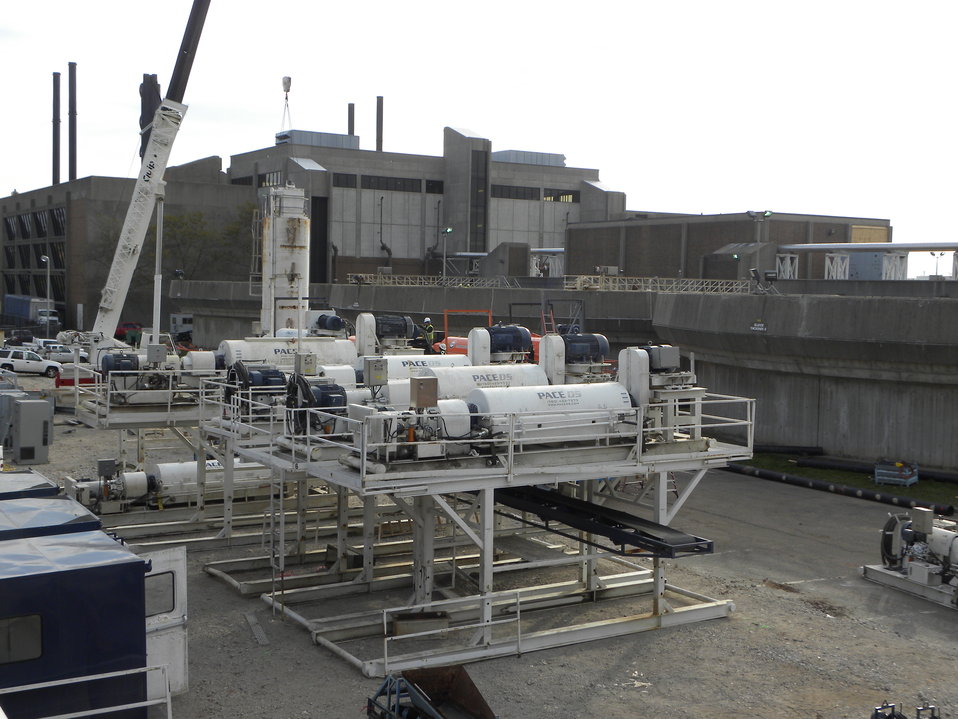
Temporary sludge plant in Newark

Installation of a temporary wastewater sludge treatment plant progresses at the Passaic Valley Sewerage Commission plant in Newark, N.J., in November 2012. The U.S. Army Corps of Engineers is overseeing construction of the temporary facility to serve the community until the main facility, inundated by more than 200 million gallons of seawater in the storm surge after Hurricane Sandy, returns to full service. One of the missions under the federal government’s Sandy response and recovery efforts is helping return critical public infrastructure damaged by the storm to service.